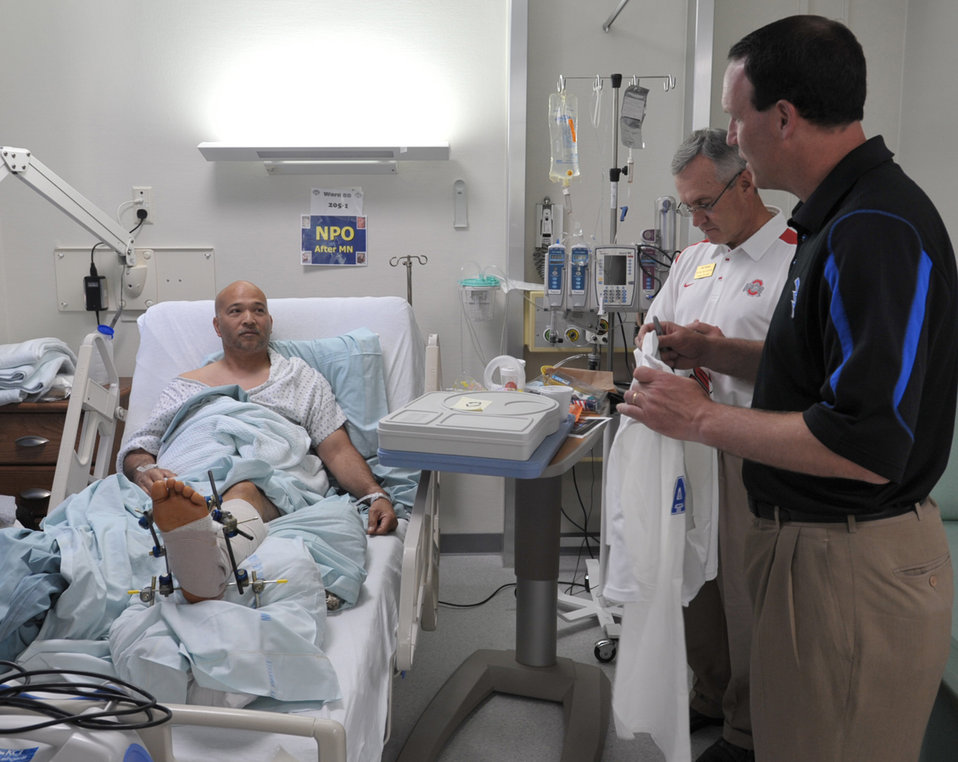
NCAA coaches visit troops in military hospital

Air Force Coach Troy Calhoun of Air Force (in blue) and Ohio State Coach Jim Tressel visit Henry Bautista at a U.S. military hospital May 29 in Landstuhl, Germany. The hospital was one of the first stops for Coaches Tour 2009, a morale-boosting mission that brings NCAA football coaches to U.S. servicemembers. Mr. Bautista served 10 years in Army intelligence without any major injuries before he became a civilian field representative for an armored vehicle contractor. He was flown to Germany from Iraq after his leg was severely injured by a mishap with one of the vehicles.